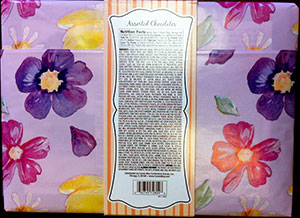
Food Safety, Allergen

March 17, 2014 – Product Recall – Fannie May Issues a Voluntary Recall of 89.08 Cases of 14.0 oz. Spring Wrapped Assorted Chocolate Box Due to Undeclared Peanuts.